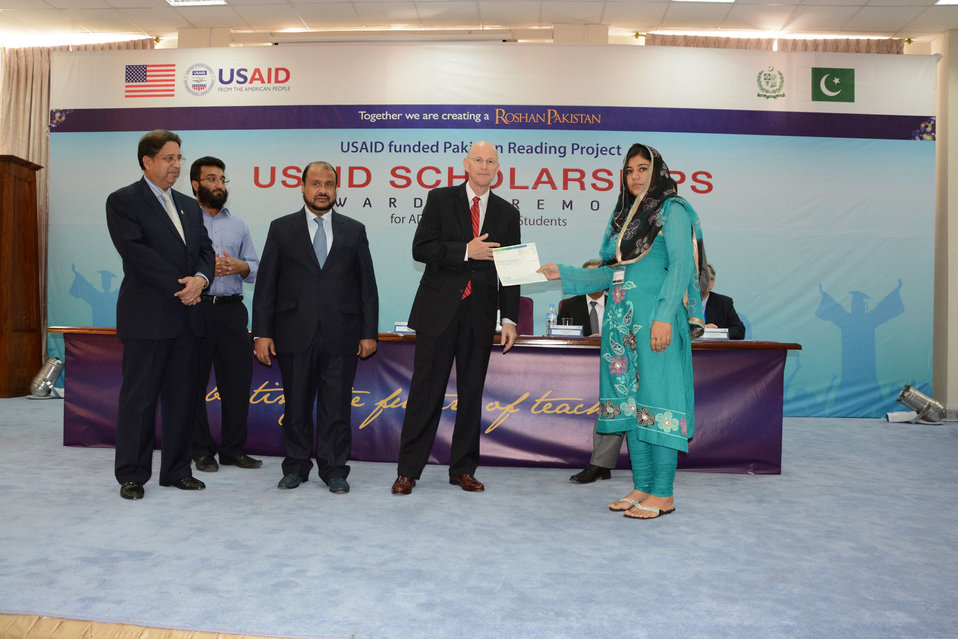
USAID awarded scholarships to 26 students of undergraduate degree programs in teacher education from the International Islamic University, Islamabad as part of the $165 million Pakistan Reading Project.